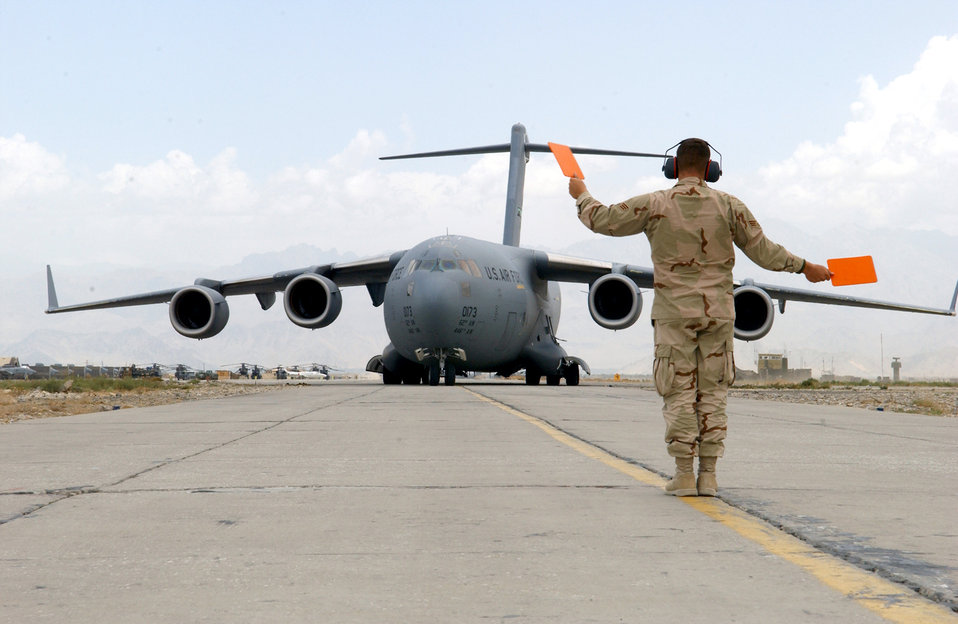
Over there

BAGRAM AIR BASE, Afghanistan -- Senior Airman George Bronson guides a C-17 Globemaster IIII crew to a parking spot on the flightline here. Airman Bronson is a 455th Expeditionary Logistics Readiness Squadron transient-alert team member deployed from Little Rock AFB, Ark. The transient-alert Airmen handle an average of 14 aircraft each 12-hour shift.